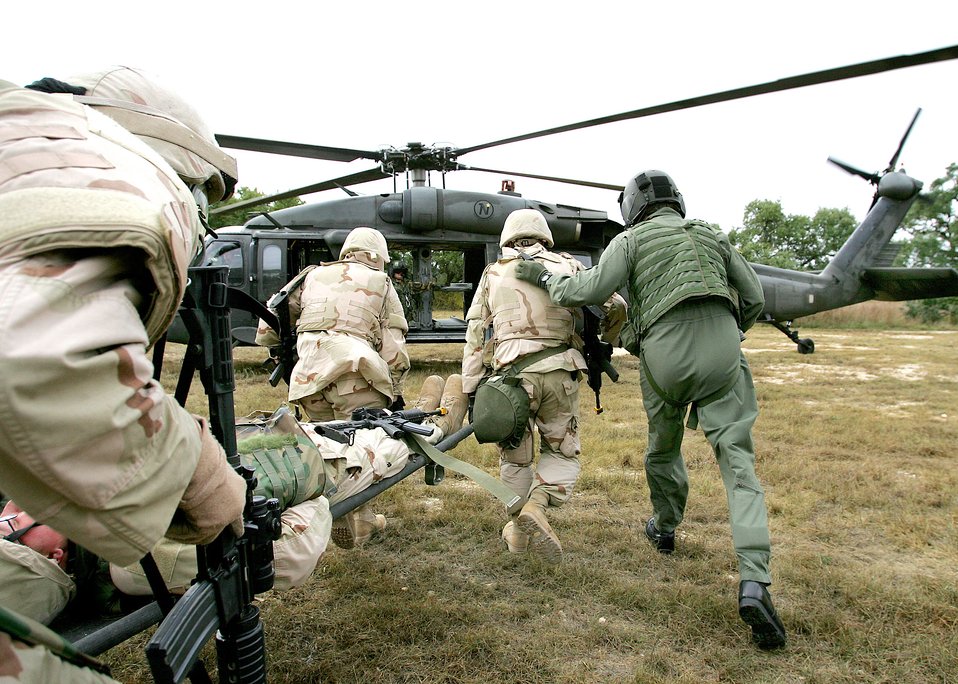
Quick transfer

CAMP BULLIS, Texas (AFPN) -- Students of the basic combat convoy course load